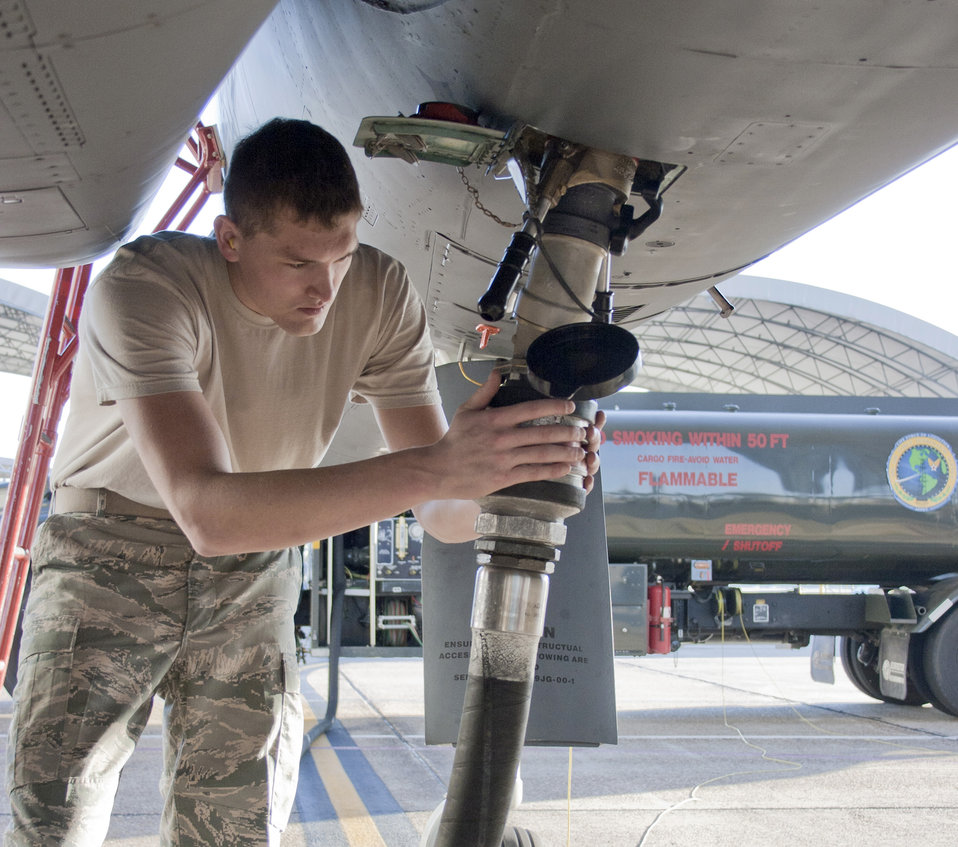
HJR PB

Senior Airman Jacob Prine checks the fuel connection to a F-15 Eagle Oct. 22, 2010, prior to a flight test of new, environmentally-friendly fuel. Aircrews from the 46th Test Wing and Air Force engineers evaluated flight parameters using a blend of standard JP-8 fuel and hydro-treated, renewable jet biofuel. The Air Force is working toward changing half of the continental U.S. jet fuel requirement to alternative fuels by 2016.